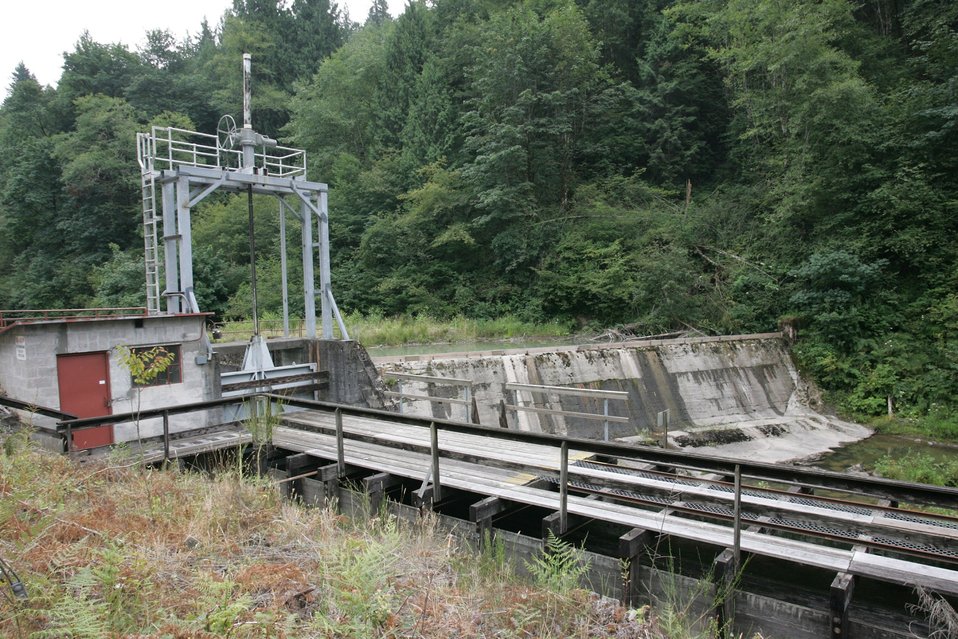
Little Sandy Dam and flume.